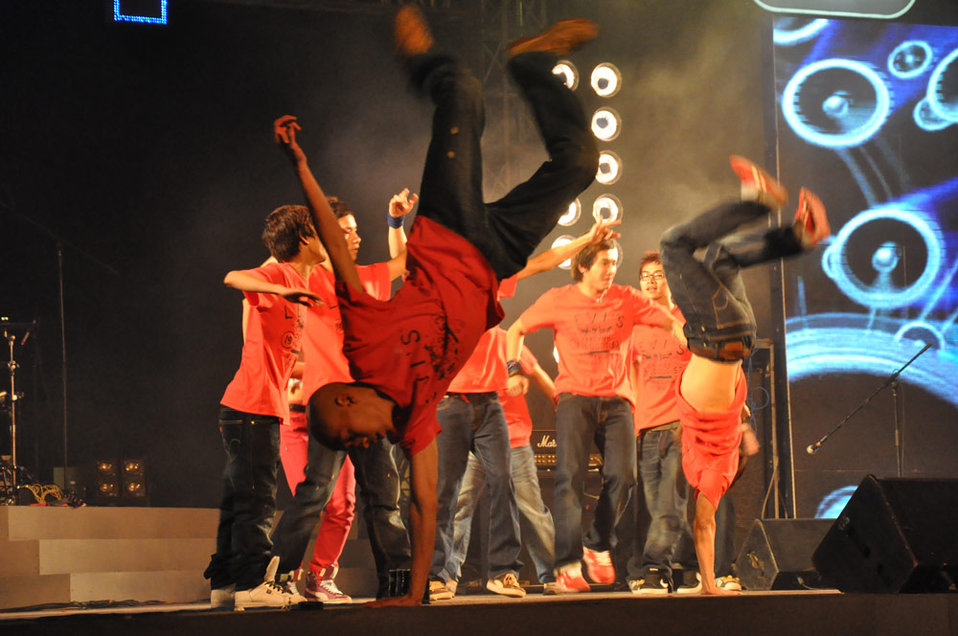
USAID Vietnam and MTVEXIT against Human Trafficking

Hanoi concert, March 27, 2010